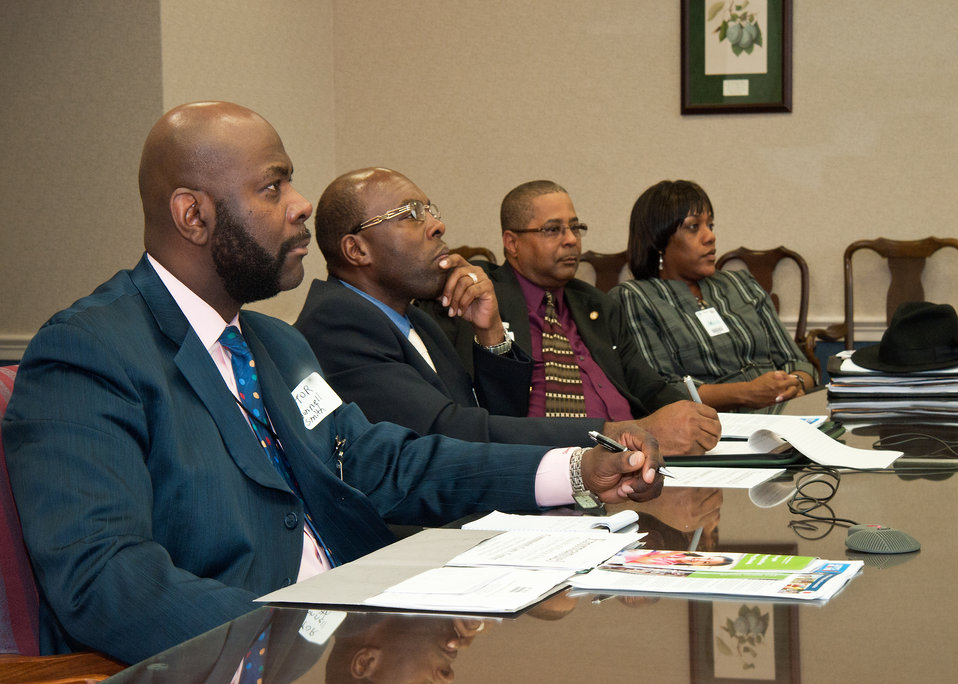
From left: Pastor Donnell Smith, Emmanuel, Church of God in Christ, Washington, DC, Pastor Dwayne E. Jones, Spread the News, Church of God in Christ, Temple Hills, Maryland, Pastor Nathan Butler and Sister Valerie Butler, Victorious Living, Church of God in Christ, Norfolk, Virginia were invited to attend a Summer Food Service Program Webinar Watch Party hosted by the Center for Faith Based and Neighborhood Partnership at the United States Department of Agriculture on Friday, May 13, 2011. The webinar was held to demonstrate the process of developing a summer food program for civic institutions. The Summer Food Service Program formed by the Food and Nutrition Service was created to ensure that children in low-income areas could continue to receive nutritious meals during long school vacations, when they do not have access to school lunch or breakfast.